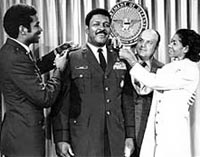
Gen. Daniel 'Chappie' James Jr. receives his fourth star.